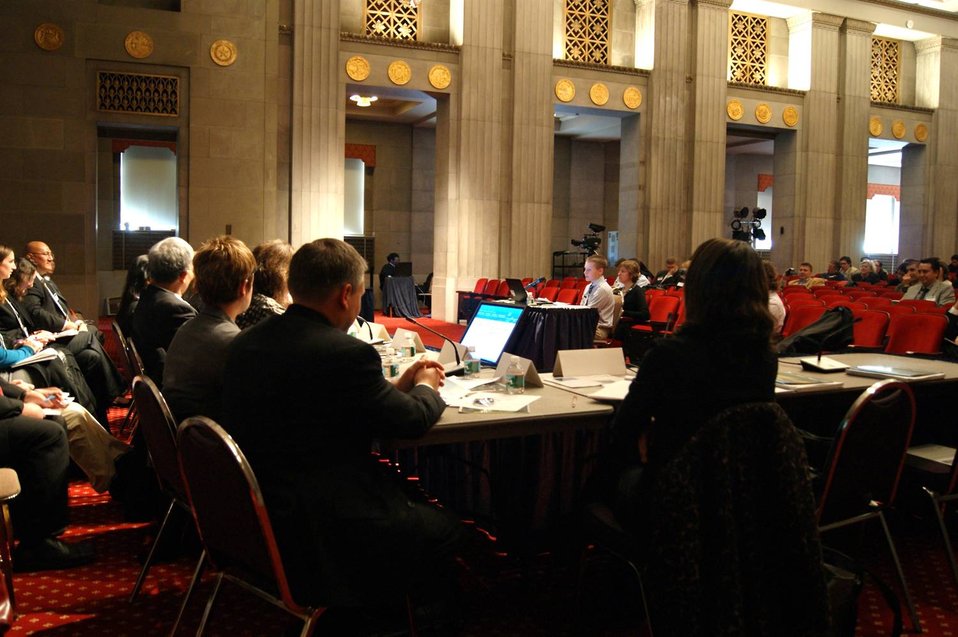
Coral Reef Task Force - Winter Meeting 2012